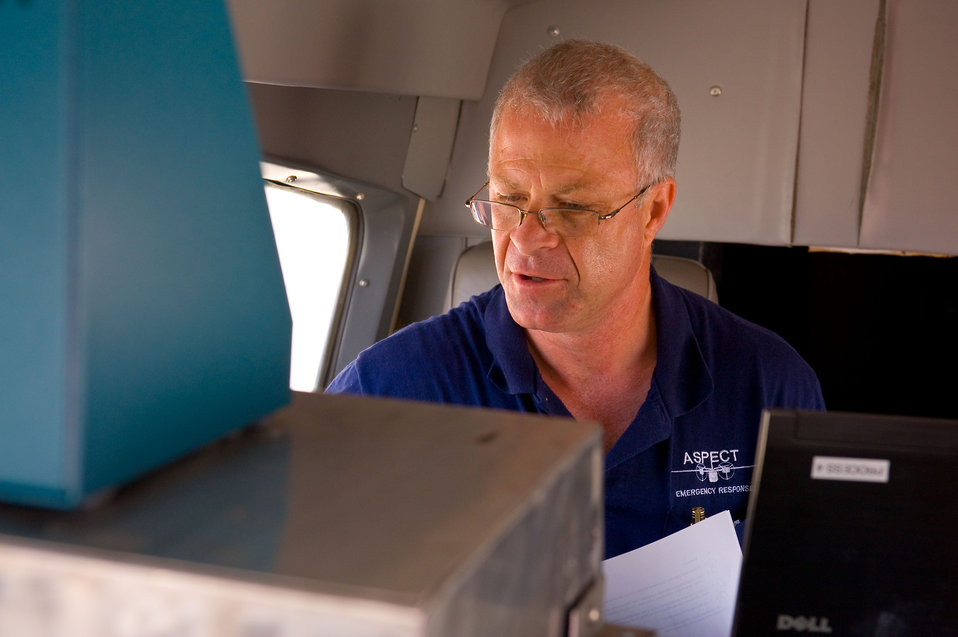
Aboard the ASPECT plane

May 14, 2010. Rich Rousseau reading instruments about EPA's ASPECT plane during a sensing mission.